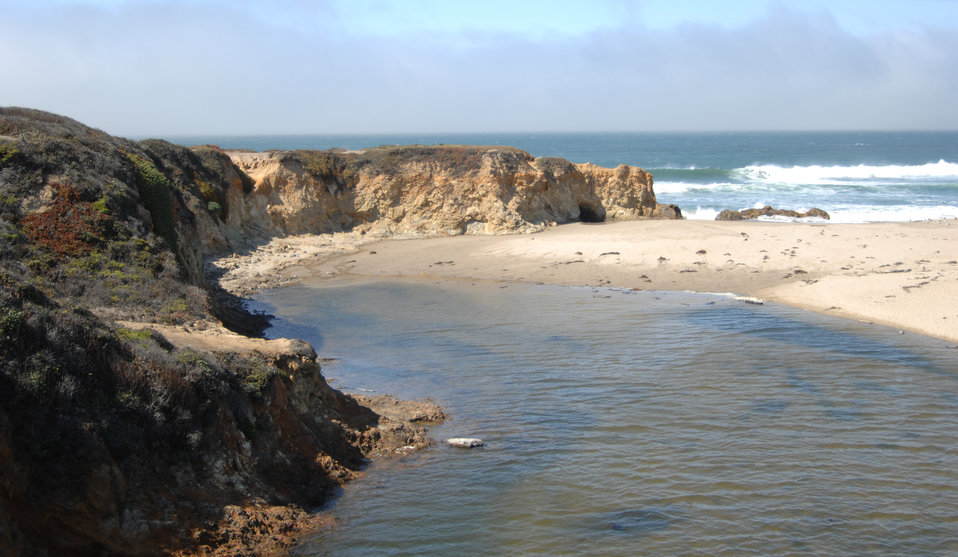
Pescadero Sandbar

For the last 11 years in a row, steelhead in Pescadero lagoon have died immediately following the initial fall breach of the sandbar that separates the lagoon from the Pacific Ocean. In 2011, 235 dead steelhead were collected, including pre-spawn adults.